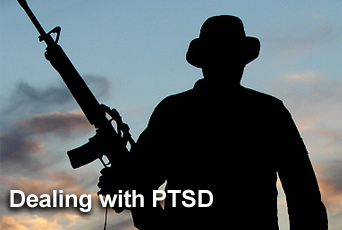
Airman's Roll Call: Stay informed about PTSD

This week's Airman's Roll Call focuses on post traumatic stress disorder and its affects on Airmen.